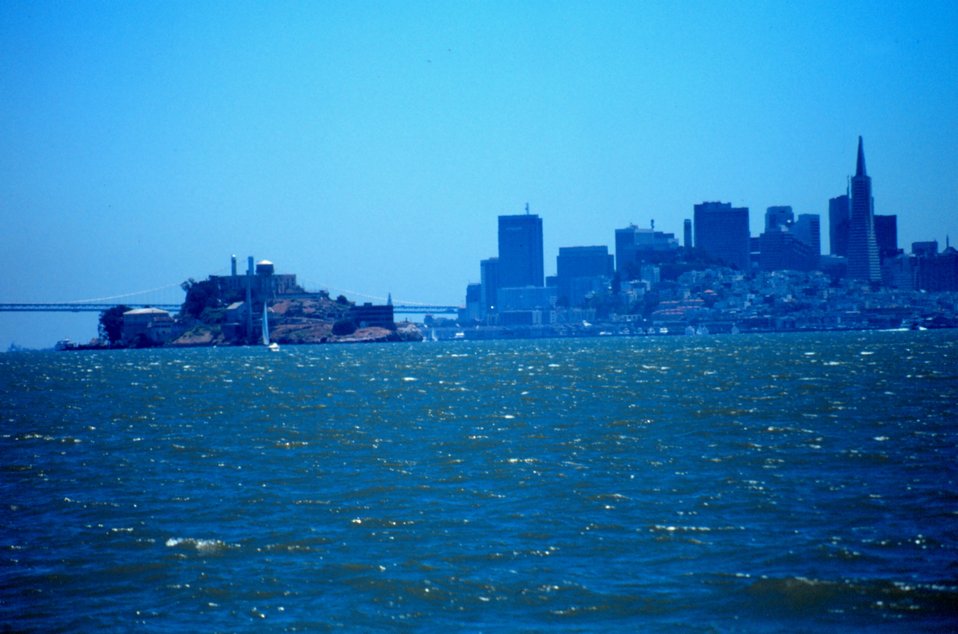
Alcatraz Island, the Oakland Bay Bridge, and the San Francisco skyline as seen from a small boat looking south.